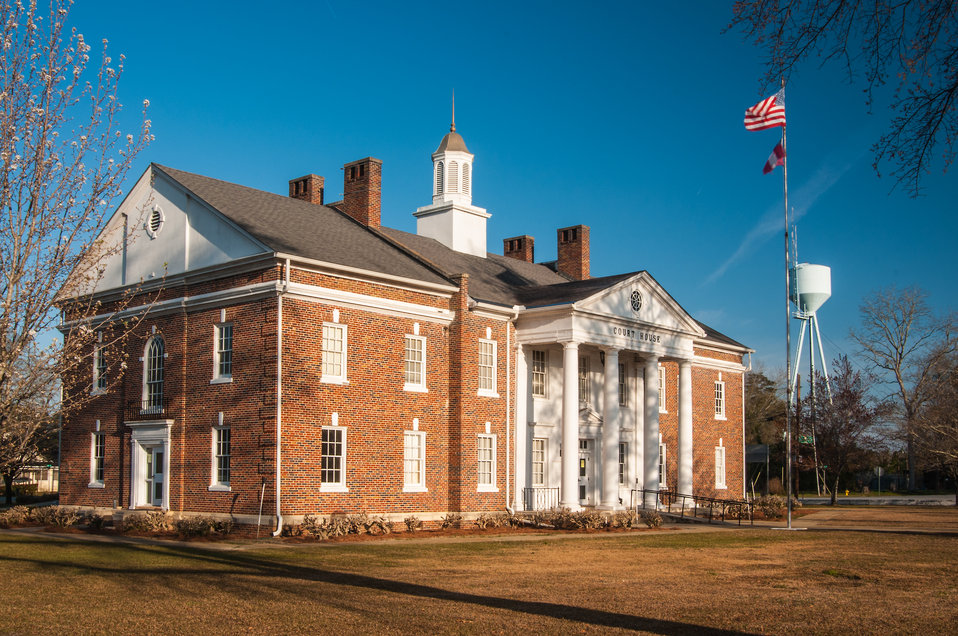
The Court House in Morgan, GA on Mar. 7, 2013. The U.S. Department of Agriculture (USDA) offers many economic grants, loans and conservation contracts through Rural Development (RD) and the Natural Resources of Conservation Service (NRCS) for areas of rural America with a high percentage of people living below the poverty level and considered economically distressed.